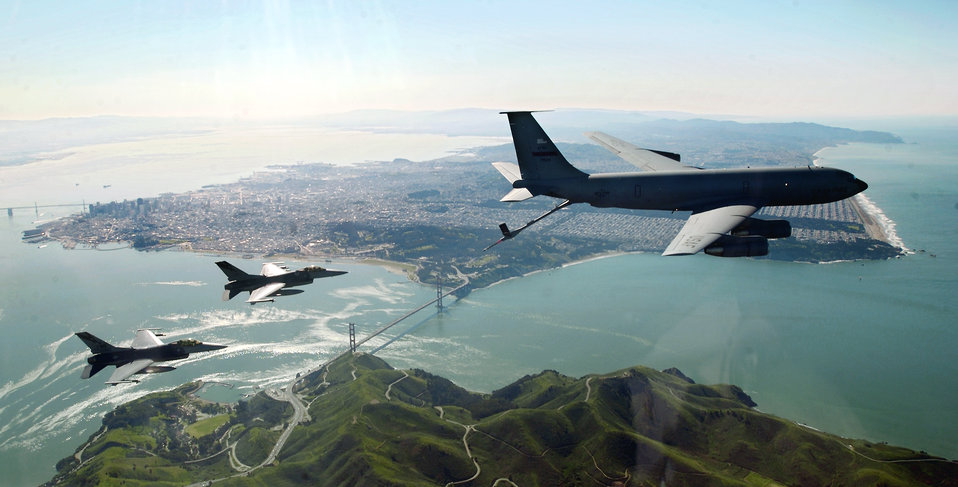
Noble Eagle

OVER THE SAN FRANCISCO BAY -- Two F-16 Fighting Falcons move into a precontact position with a KC-135E Stratotanker before refueling during an Operation Noble Eagle training patrol March 16. The F-16s are assigned to the California Air National Guard's 144th Fighter Wing in Fresno and the KC-135 is assigned to the 940th Aerial Refueling Wing at Beale Air Force Base, Calif.